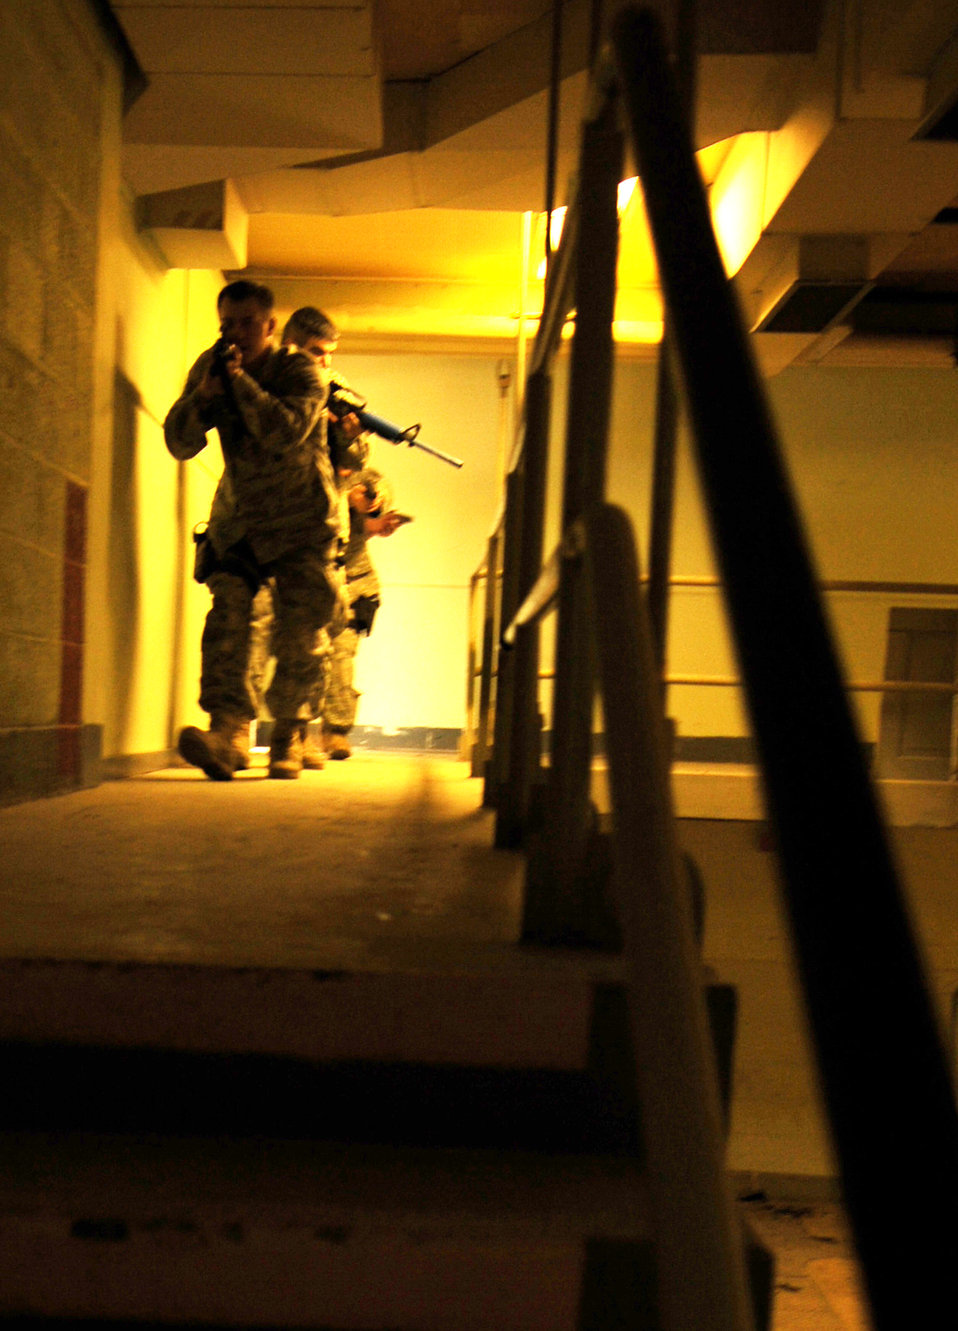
Holloman Airmen train to fight back

Members of the 49th Security Forces Squadron practice clearing a building during